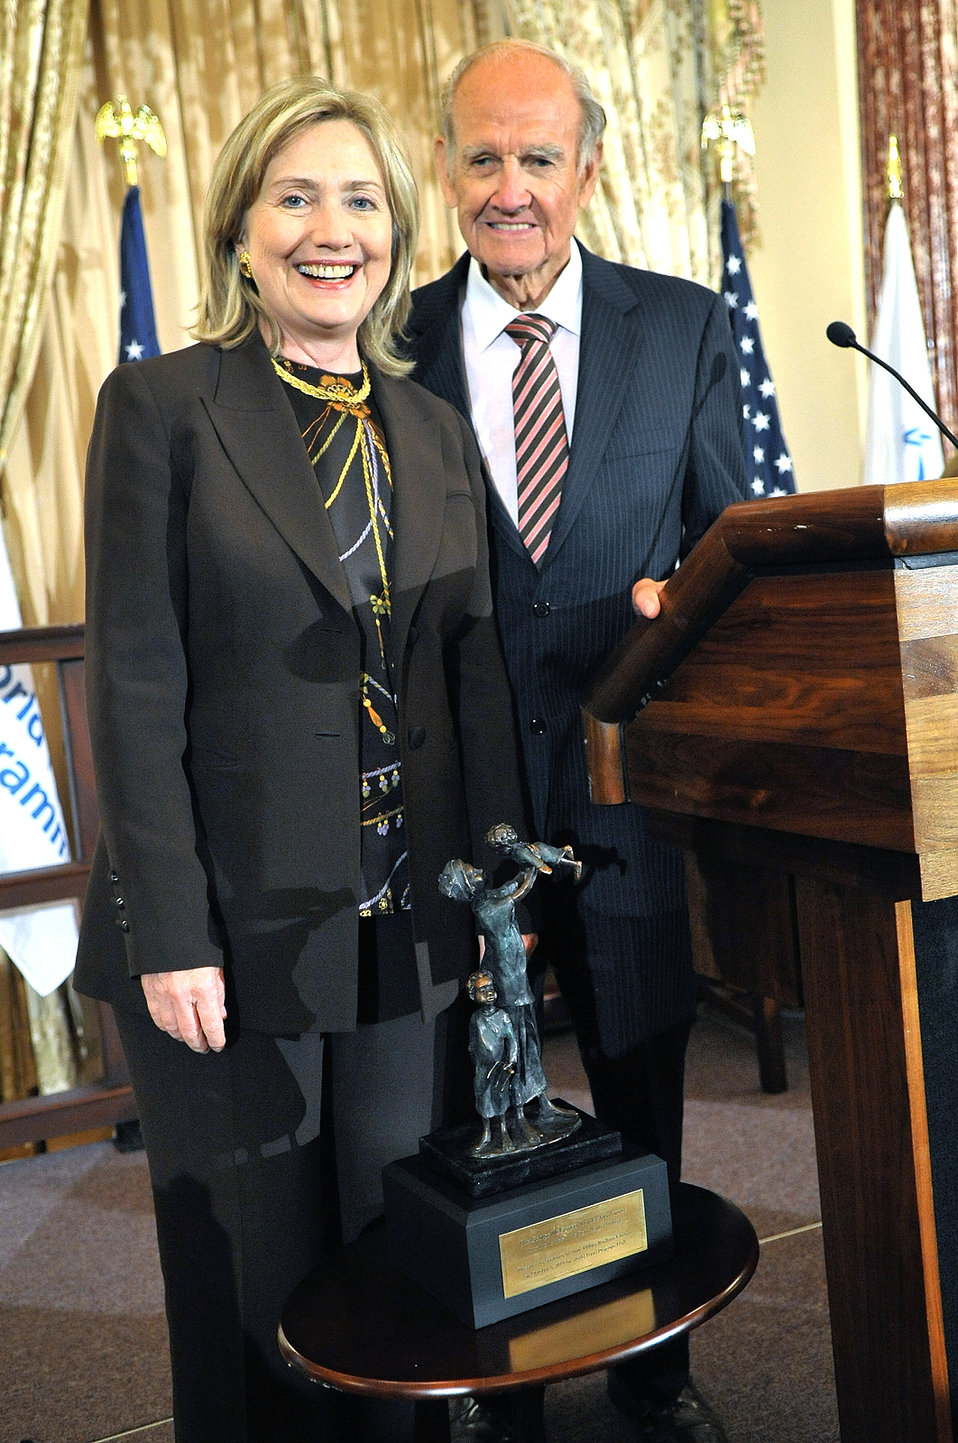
Secretary Clinton Accepts the McGovern Award for 'Leadership in the Fight Against Hunger'

U.S. Secretary of State Hillary Rodham Clinton receives the “Leadership in the Fight Against Hunger” Award. The event was co-hosted by the World Food Program-USA and the U.S. Department of State's Global Partnership Initiative, in the Franklin Room at the U.S. Department of State in Washington, D.C., October 5, 2010.